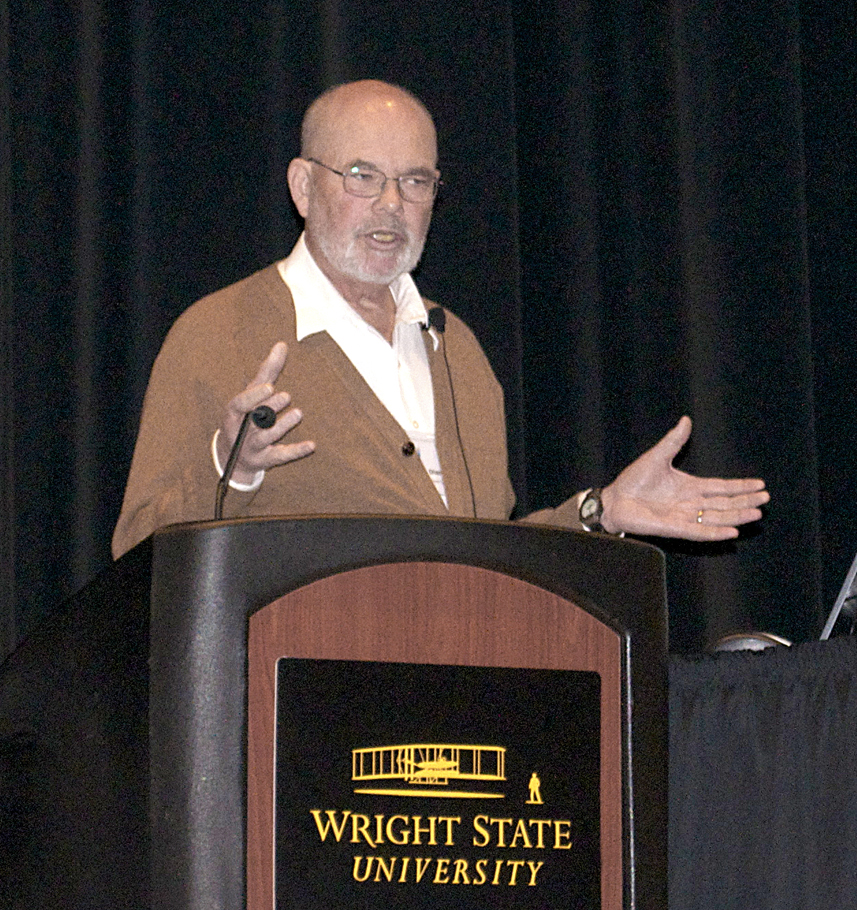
AFRL scientists share research during aviation psychology symposium

Dr. Key Dismukes delivers the keynote address May 2, 2011, during the 16th annual International Symposium on Aviation Psychology at Wright-Patterson Air Force Base, Ohio. Dr. Dismukes spoke about the state of aviation psychology as a discipline. He is retired chief scientist for aerospace human factors at NASA Ames Research Center.